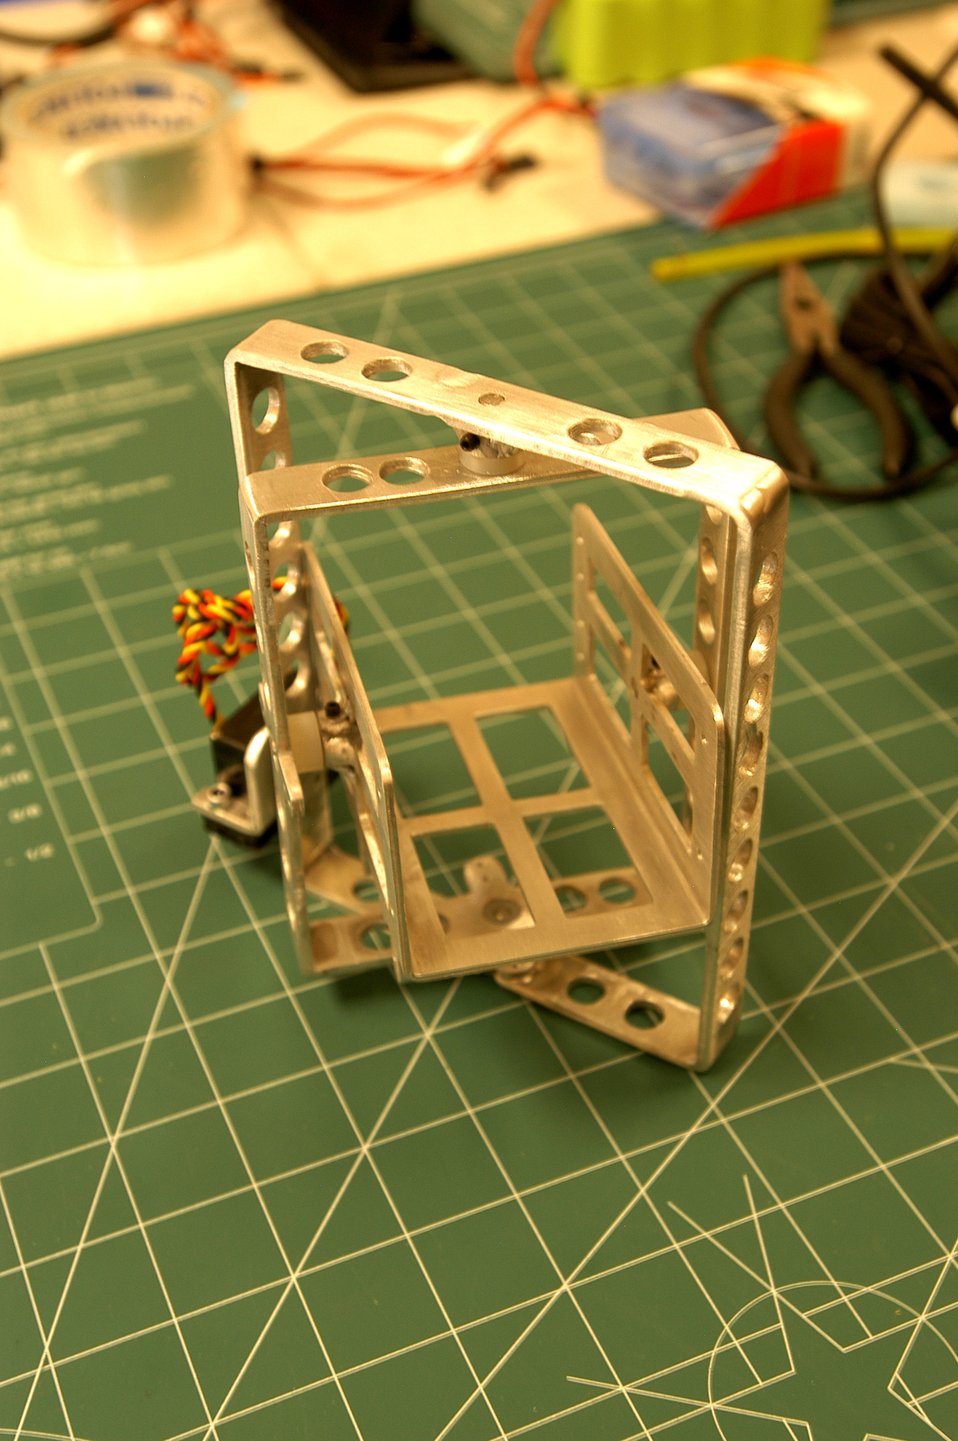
UAVs

U.S. AIR FORCE ACADEMY, Colo. (AFPN) -- A cadet-designed gimbal allows the surveillance camera mounted on a UAV to move in three dimensions as it surveys a target.